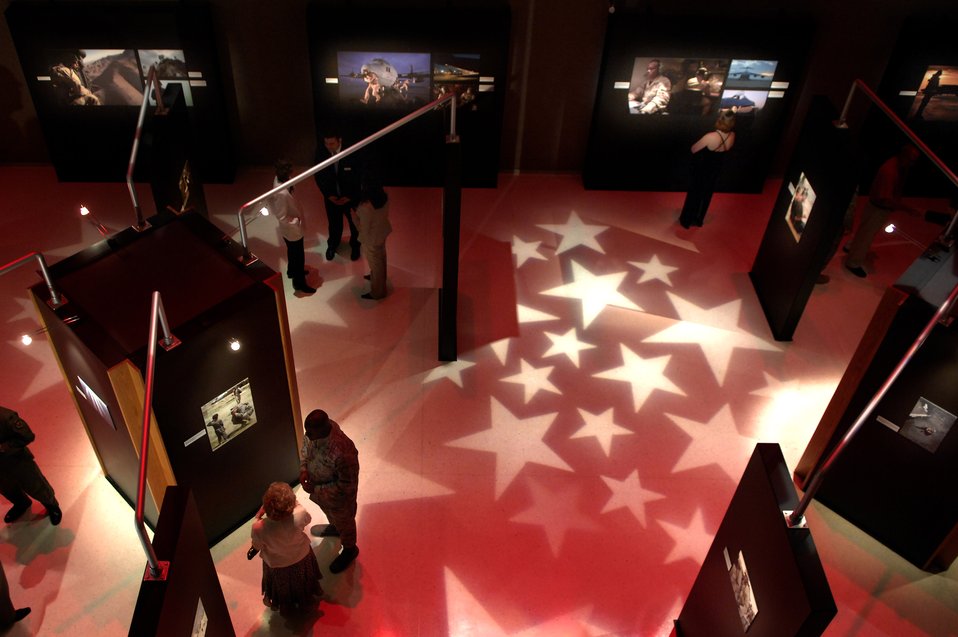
The camera in combat

Recognizing Air Force photographers and their work, the new